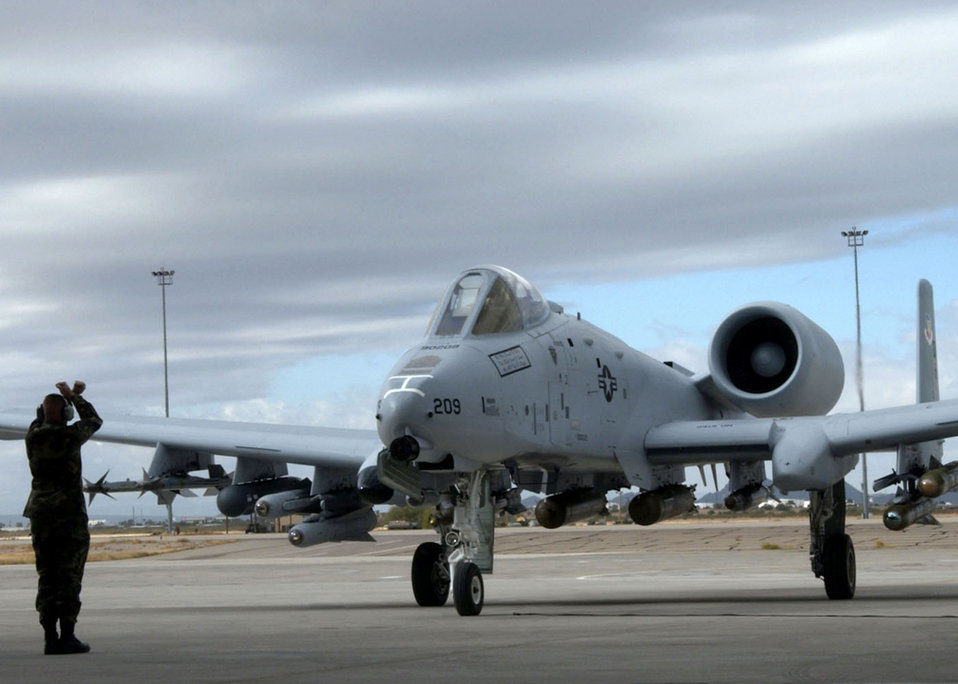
Enhanced A-10 arrives at Davis-Monthan

A newly modified A-10C Thunderbolt II taxis in during the roll-out ceremony Nov. 29 at Davis-Monthan Air Force Base, Ariz. The A-10 has been modified with precision engagement technology to create the new and improved A-10C. The enhancements include full integration of sensors, multi-functional color displays and a new hands-on-throttle-and-stick interface.